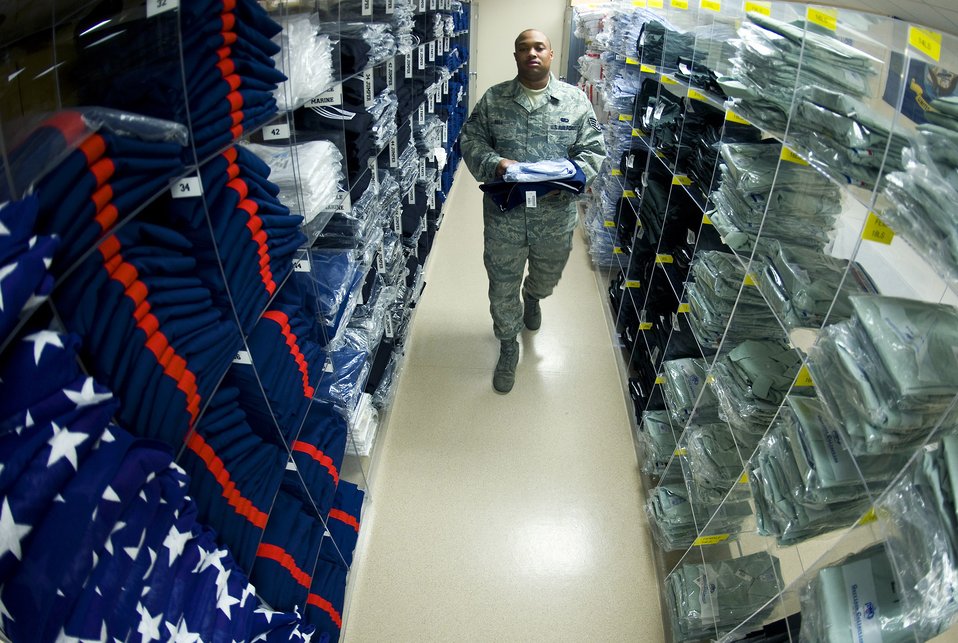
Air Force Mortuary Affairs Operations Center

Staff Sgt. Charles Bell, a mortuary technician at the Air Force Mortuary Affairs Operations Center at Dover Air Force Base, Del., walks through rows of military service dress uniforms that are stored there for every rank and size. Sgt. Bell is the Air Force non-commisioned officer in charge of logistics and oversees ordering and stocking service dress uniforms and items for dignified transfer of remains.